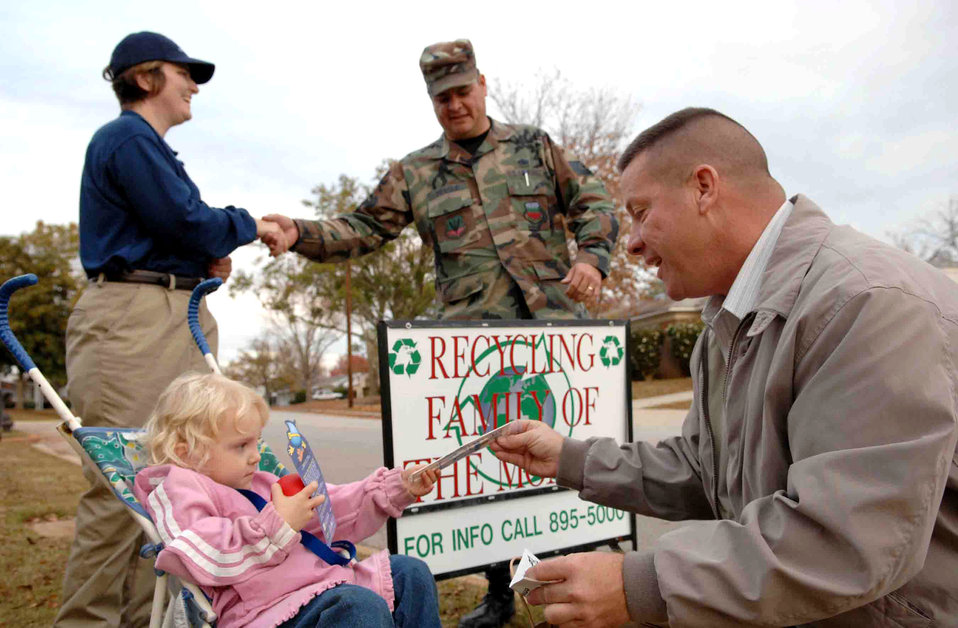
One man's trash is another man's treasure

Mark Hall shows the contents of a gift package to 2-year-old Amelie Helbing as Tech. Sgt. Andrew Teague congratulates Staff Sgt. Nicole Helbing for winning the Recycling Family of the Month Award Nov. 27 at Shaw Air Force Base, S.C. Mr. Hall is a 20th Civil Engineer Squadron pollution prevention planner. Sergeant Teague is a 20th CES environmental plans overseer and Sergeant Helbing is a 20th Foward Support Squadron fitness shift supervisor.